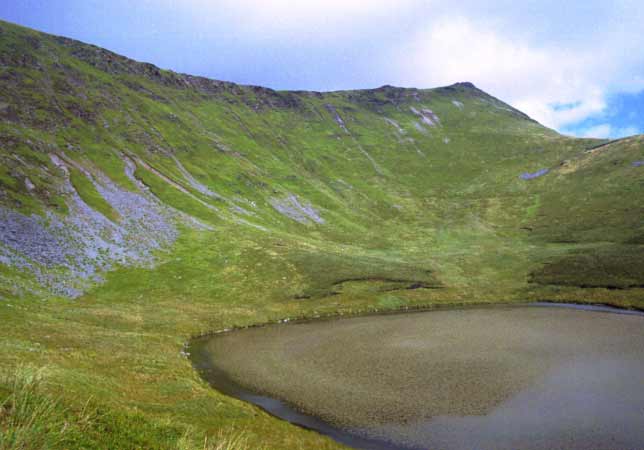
The south side of the Berwyn ridge with Llyn Lluncaws lake in the foreground. The summit is Cadair Berwyn. Taken by Stemonitis on 23rd of July 2001.